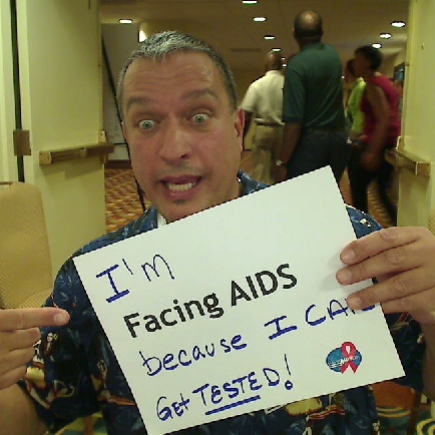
I'm Facing AIDS because I can get TESTED!